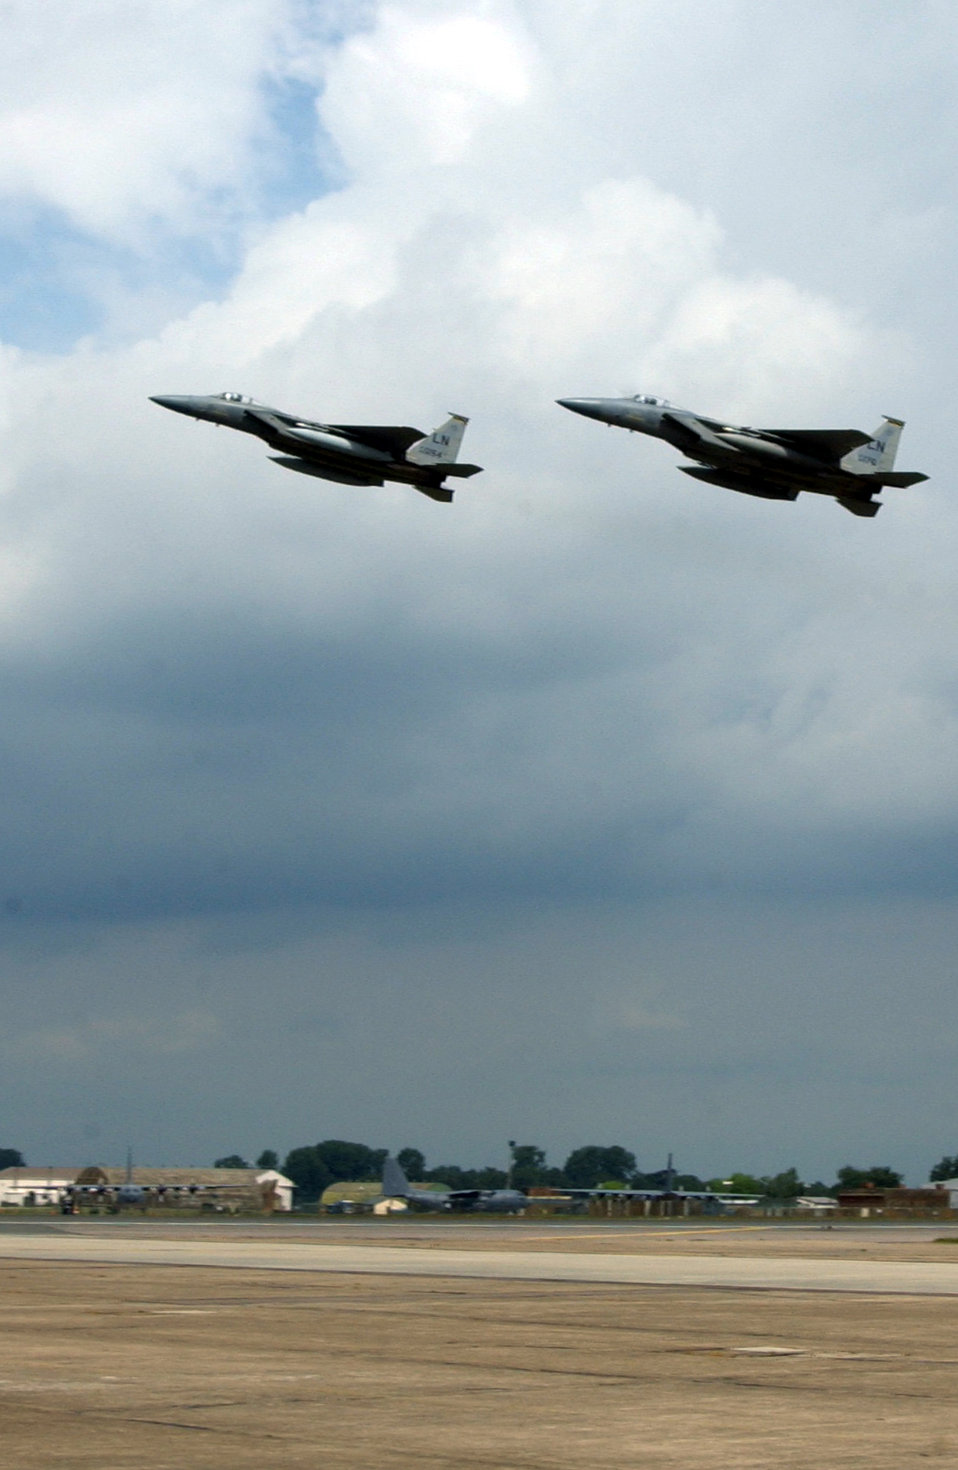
Two eagles take flight

ROYAL AIR FORCE FAIRFORD, England -- Two F-15C Eagles take to the sky for a training sortie here May 20. The F-15s are assigned to the 493rd Fighter Squadron at Royal Air Force Lakenheath, England.